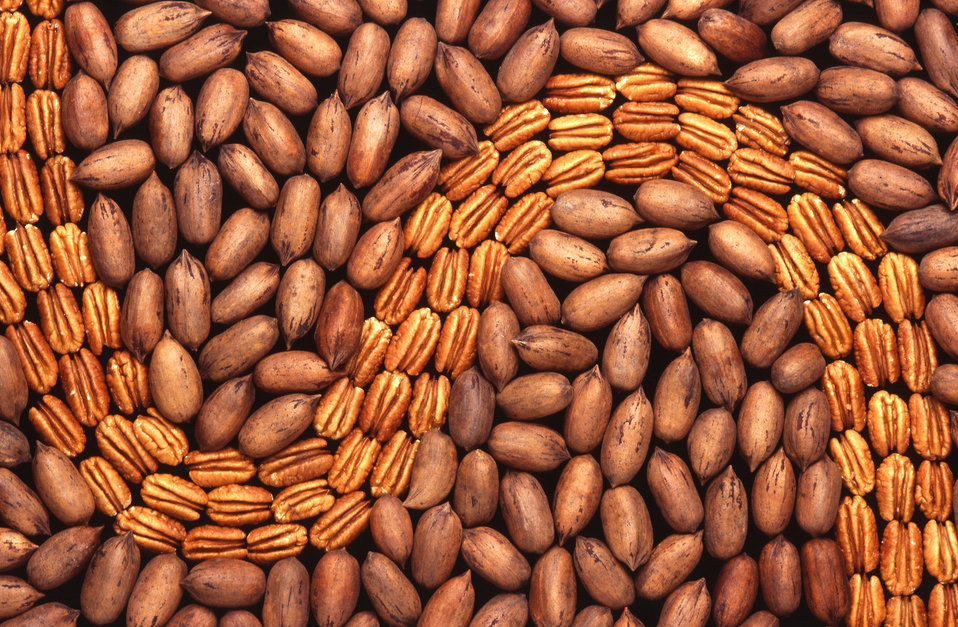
Pecans contain protein, potassium, phosphorus, and magnesium, calcium, and 95 percent unsaturated fats. Unfortunately for pecan trees, worrisome diseases keep popping up and of U.S. Department of Agriculture’s (USDA) Agricultural Research Service (ARS) scientists are working alongside growers to come up with management strategies. One solution is to breed disease-resistance into the crop. USDA ARS conducts the world's only pecan-breeding program, serving growers in the U.S., Mexico, and other pecan-growing countries. Out of this program came pecan variety called Pawnee that was released in 1984. This variety is insect and disease resistant and produces notably large nuts of high quality as well.